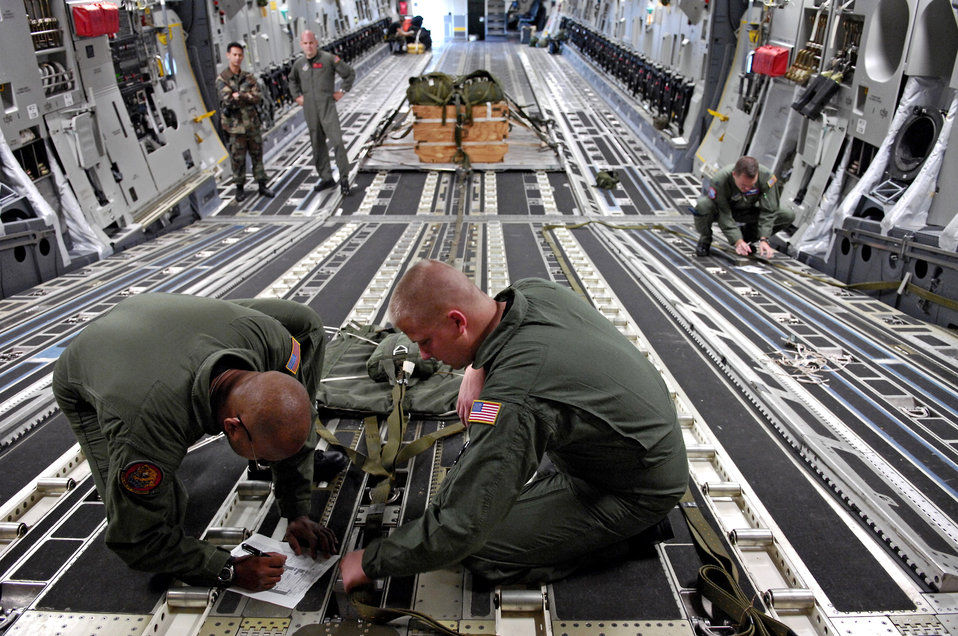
Hickam Airmen conduct 4-ship C-17 airdrop training

Staff Sgt. Ike Murray goes over a joint airdrop inspection checklist with Senior Airman Todd Tichawa for an upcoming C-17 Globemaster III four-ship, airdrop training mission Aug. 13 at Hickam Air Force Base, Hawaii. The Airmen are from the 535th Airlift Squadron.